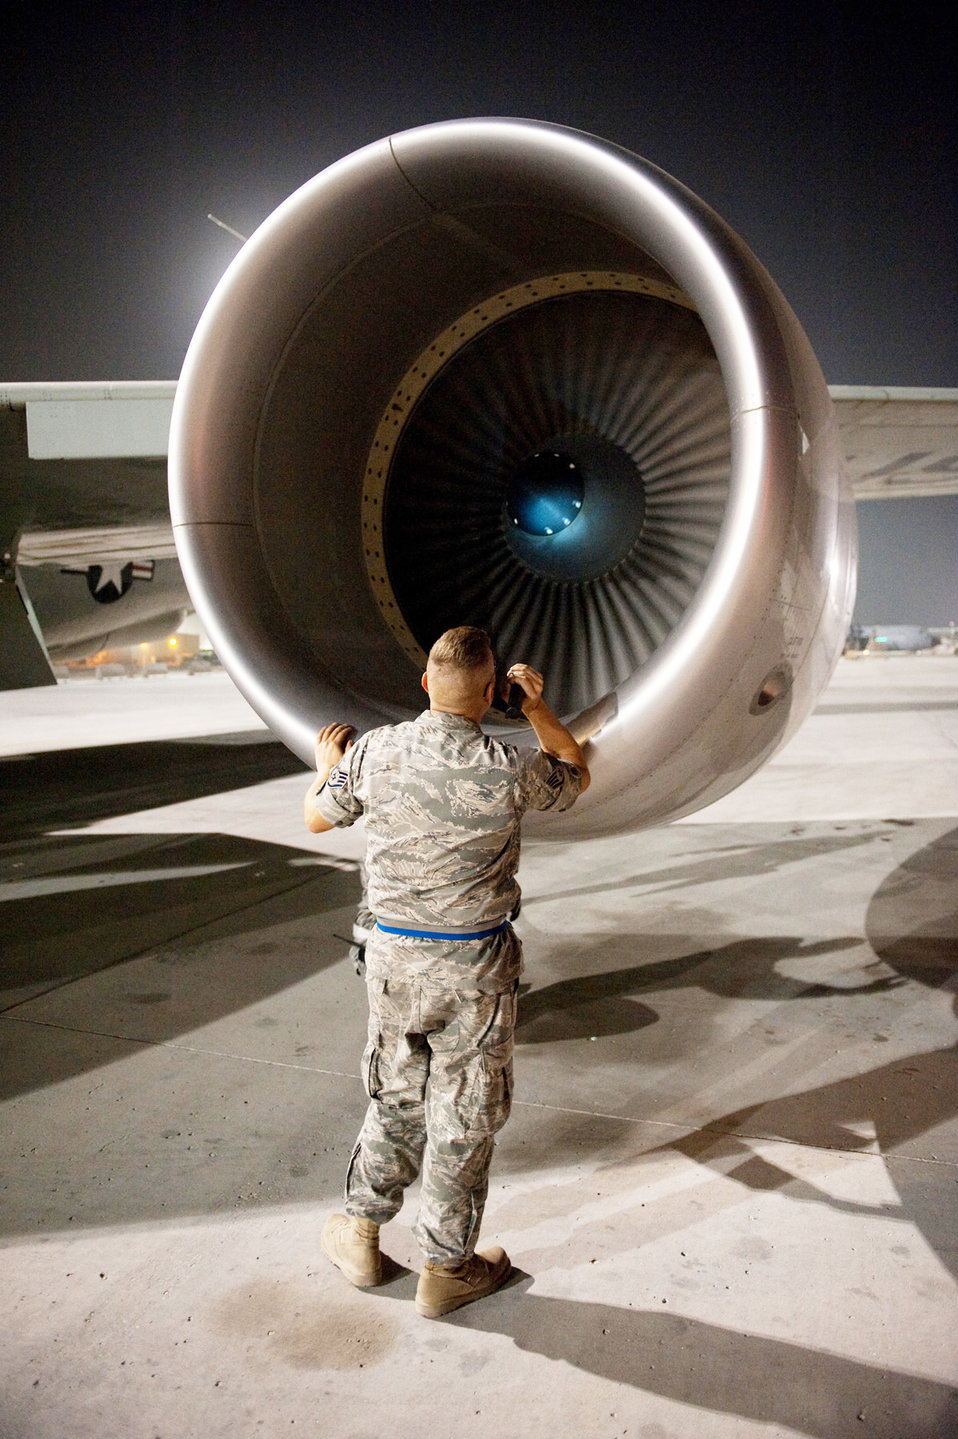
Unit surpasses consecutive 7,000 days with forces in Southwest Asia

Staff Sgt. Michael Palmer inspects an RC-135V/W Rivet Joint for damage after it returned from a mission Oct. 7, 2009, at an air base in Southwest Asia. Sergeant Palmer is assigned to the 55th Aircraft Maintenance Unit deployed from Offutt Air Force Base, Neb.